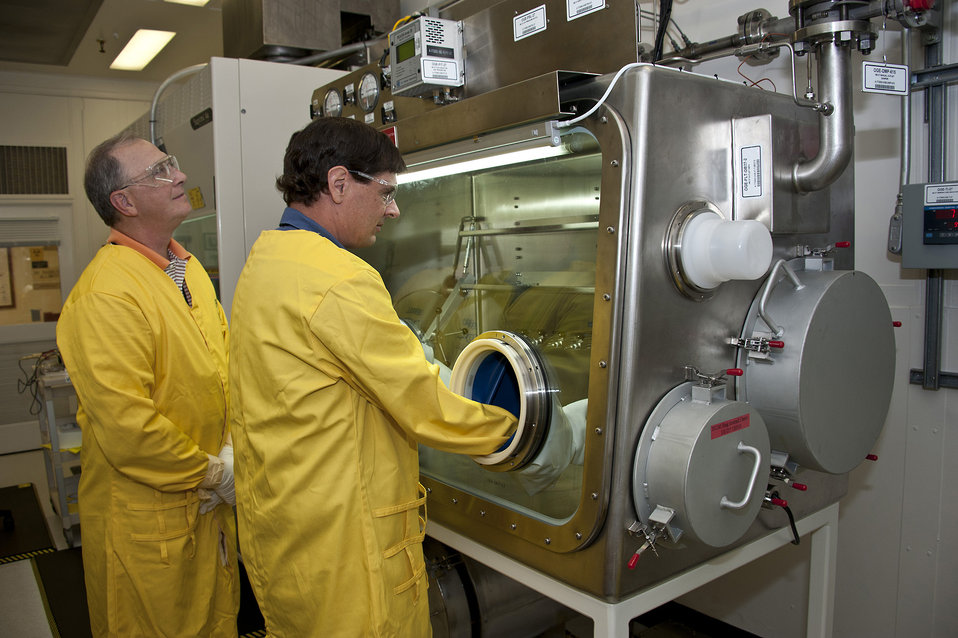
New glovebox design

Med Allen (left), Savannah River National Laboratory (SRNL), Glovebox Design Authority, is shown working with David Nowak, SRNL Chemical Analysis Technician, with a new mass-produced industrial glovebox that has been specially and safely configured by the vendor to meet or exceed nuclear regulatory requirements versus buying custom designed and fabricated gloveboxes, saving approximately $220,000 per glovebox.